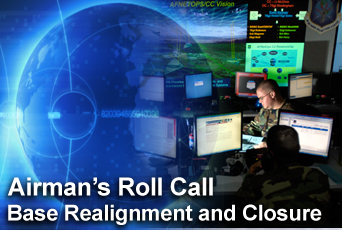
Latest Roll Call discusses base realignment, closure

The July 25 Roll Call discusses base realignment and closure requirements for Air Force installations and offices to be closed or moved to maximize efficiency.